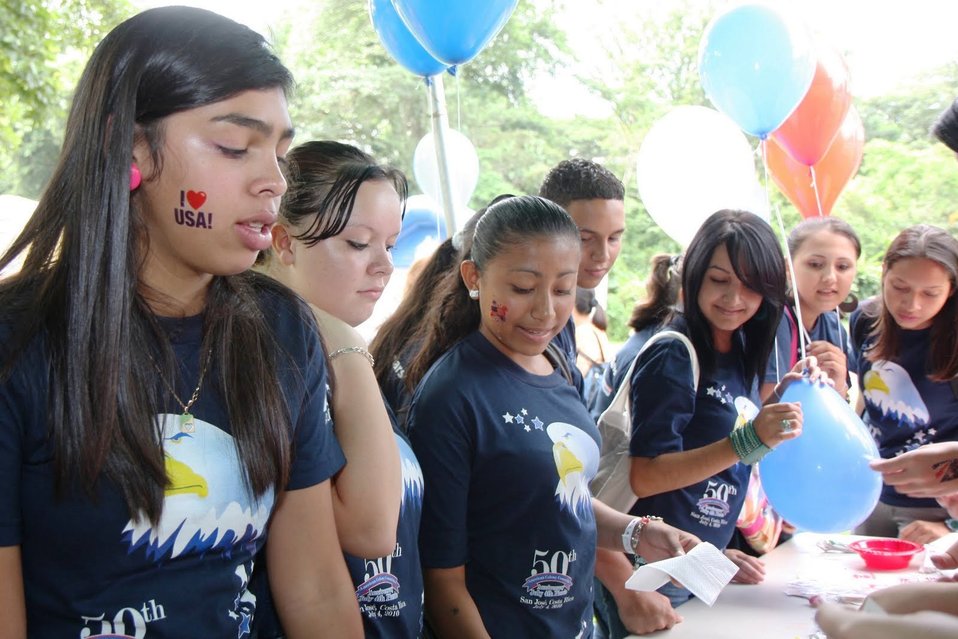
Students Have Their Faces Painted

Students from U.S. Embassy San Jose in Costa Rica's English Access Microscholarship Program get their faces painted during the U.S. Independence Day celebration on July 2, 2010, in San Jose, Costa Rica.